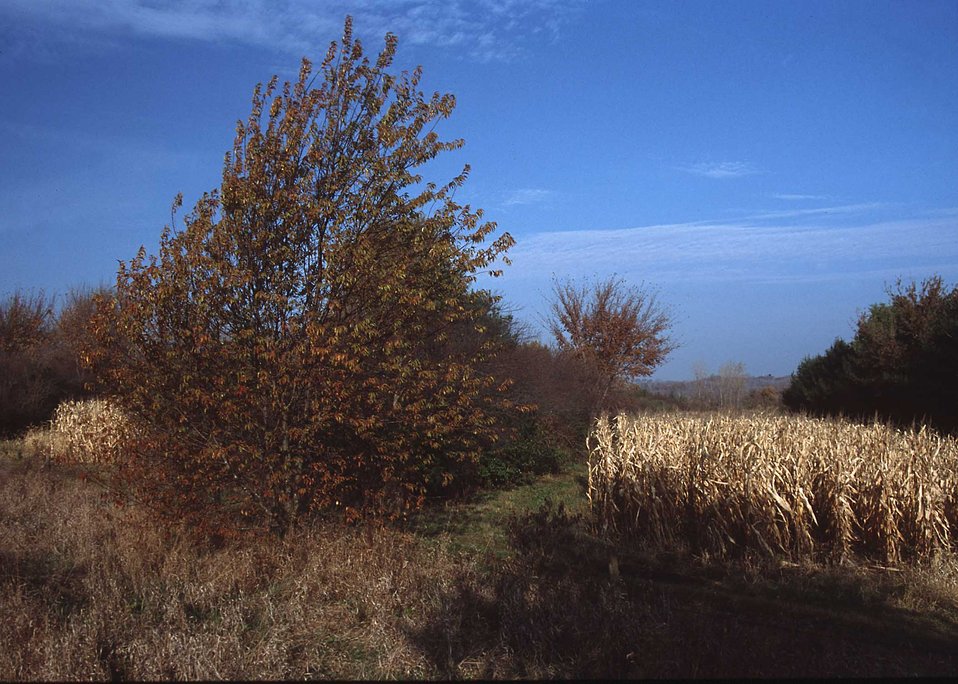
Landowners especially interested in wildlife may want to plant corn or other grain as food plots near escape cover asr winter food for wildlife.